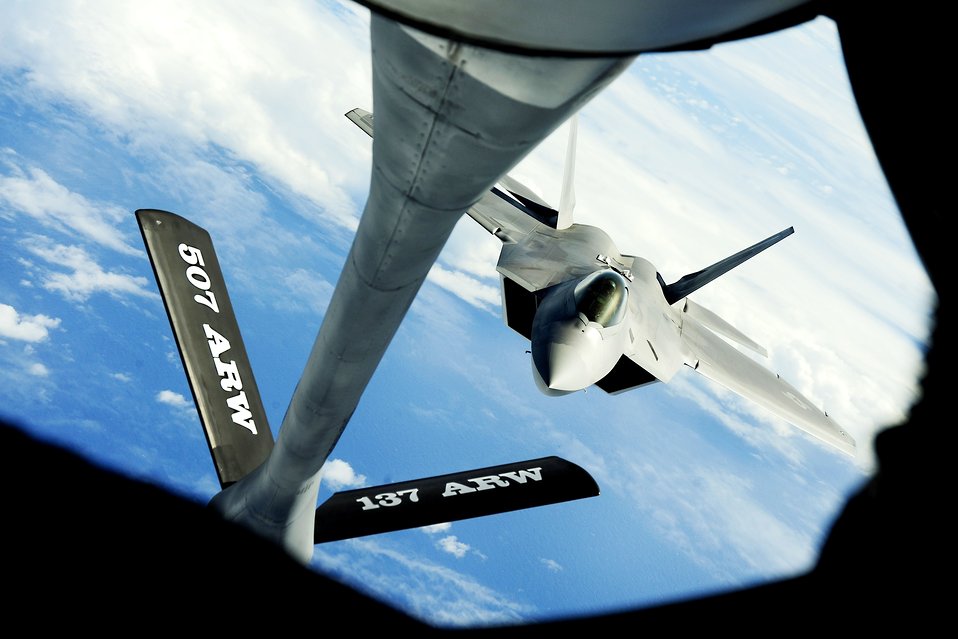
Ready to refuel

An F-22 Raptor prepares to receive fuel from a KC-135 Stratotanker near Andersen Air Force Base, Guam, Feb. 17, 2010. The Raptor is assigned to the 90th Fighter Squadron on Elmendorf AFB, Alaska, and the Stratotanker is assigned to the 465th Air Refueling Squadron on Tinker AFB, Okla.